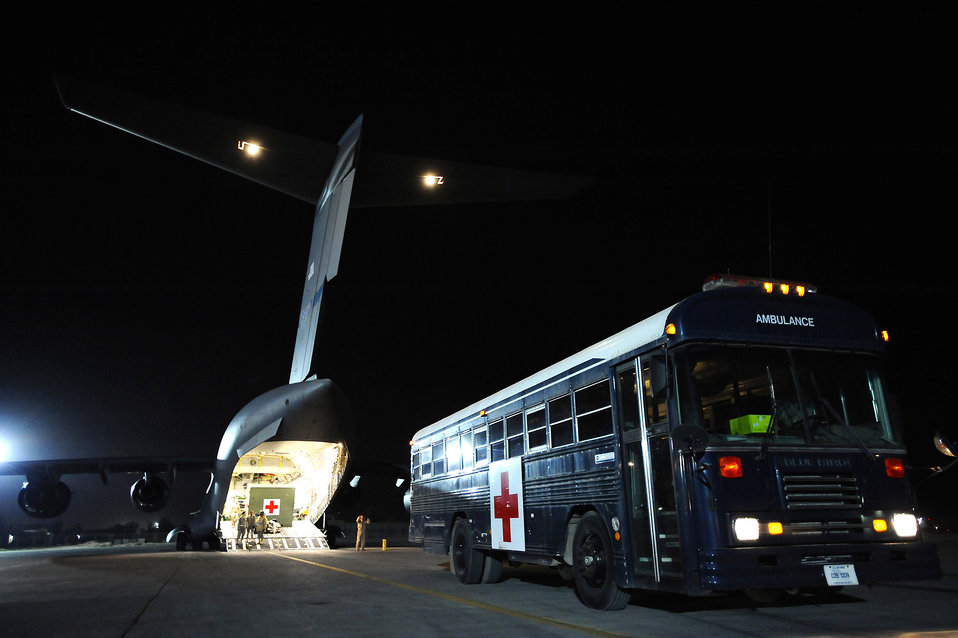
Warrior care

An ambulance bus from the Contingency Aeromedical Staging Facility prepares to unload ambulatory and litter-bound patients onto a C-17 Globemaster III Nov. 27 at Joint Base Balad, Iraq. In 2008, more than 7,500 patients have been transported from the CASF in 650 missions.